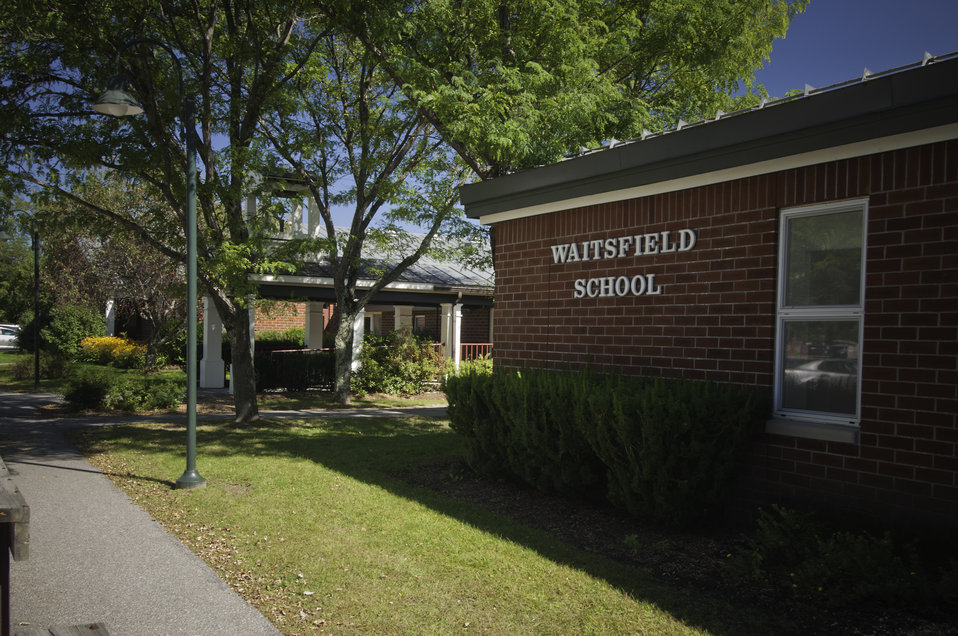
The Waitsfield School in Waitsfield, VT was able to secure funding for community water and wastewater systems to promote and encourage reasonable growth with a U.S. Department of Agriculture (USDA) Rural Development (RD) Water and Environmental Program (WEP) grant on Sep. 17, 2013.